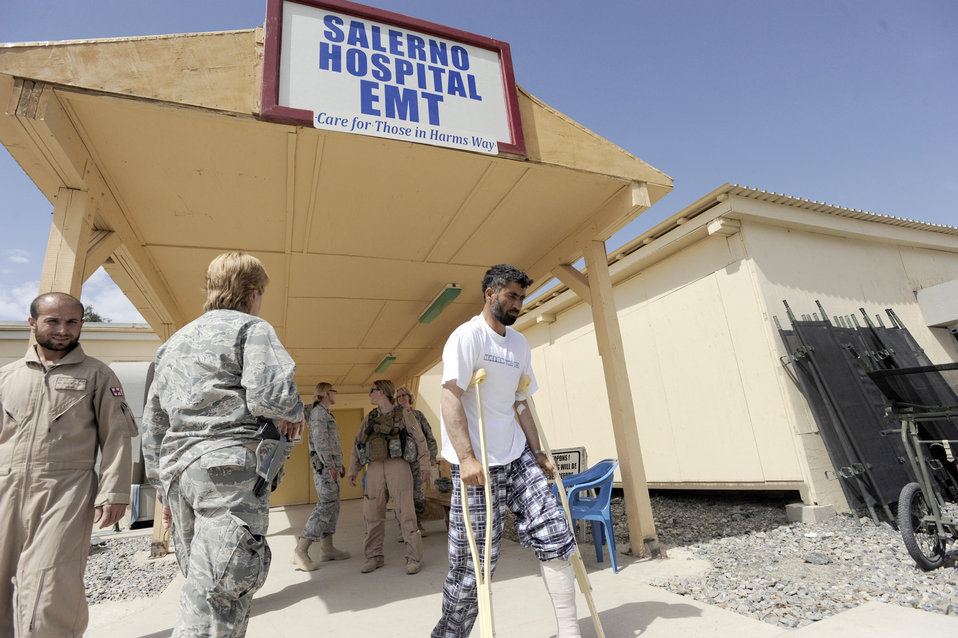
Joint hospital staff cares for warfighters, Afghans

An Afghan man is taken to an ambulance for transportation on an Mi-17 helicopter to be medically evacuated May 12, 2010, at Forward Operating Base Salerno, Afghanistan. On average, the Salerno Hospital staff treats five to seven patients daily.